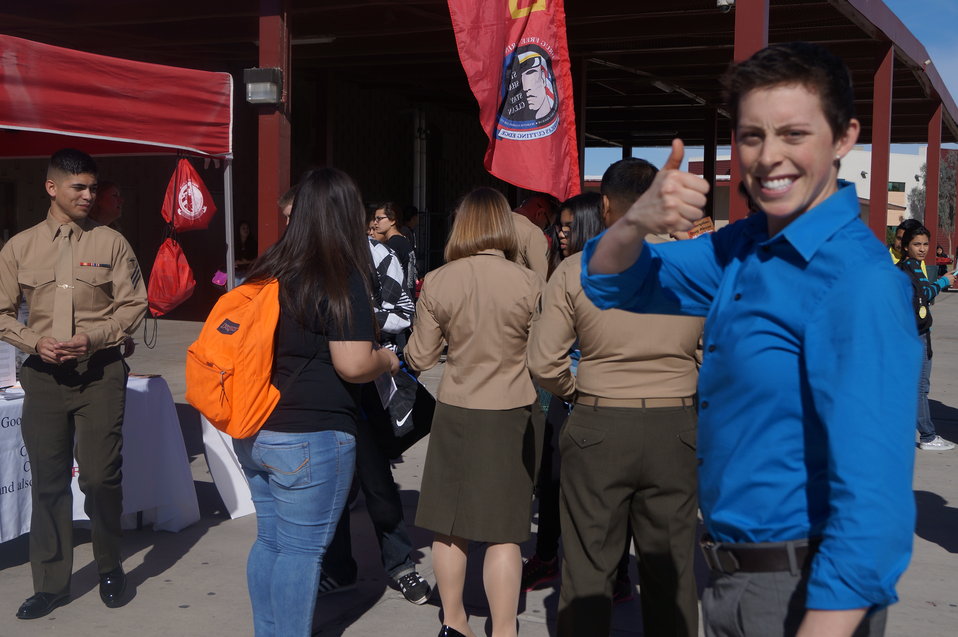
Nationa Drug Facts Week - KOFA HS

The Drug Demand Reduction Program out of Yuma Arizona held numerous events at local schools to support NIDA's National Drug Facts Week, Jan. 27-Feb. 2 2014. Teens participated in drug awareness games, and helped to Shatter the Myths about teen substance abuse.